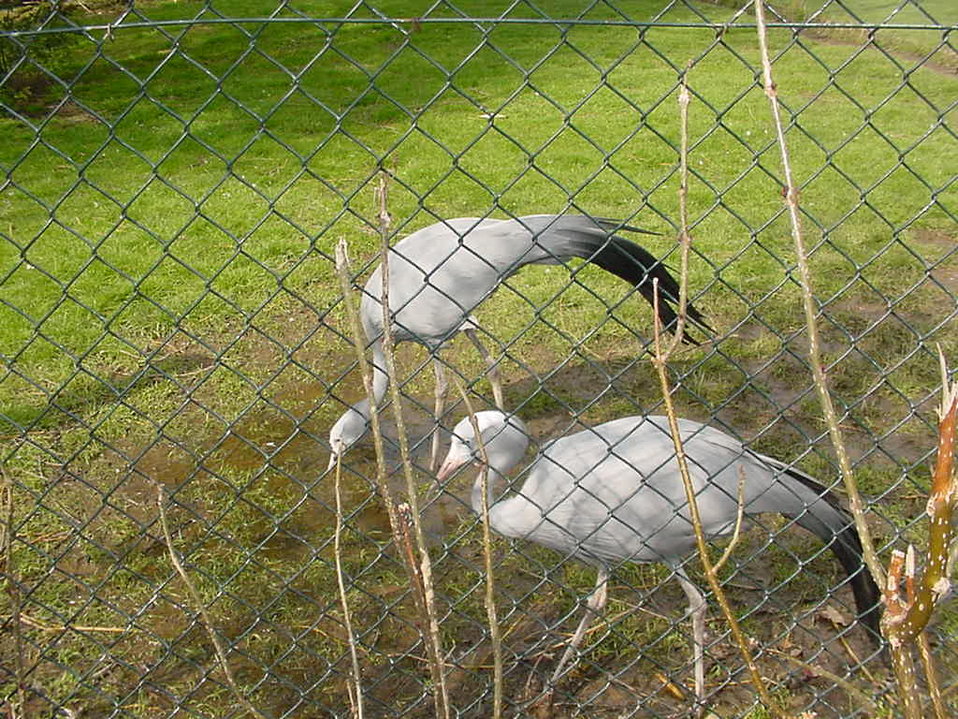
Blue cranes at Chester Zoo